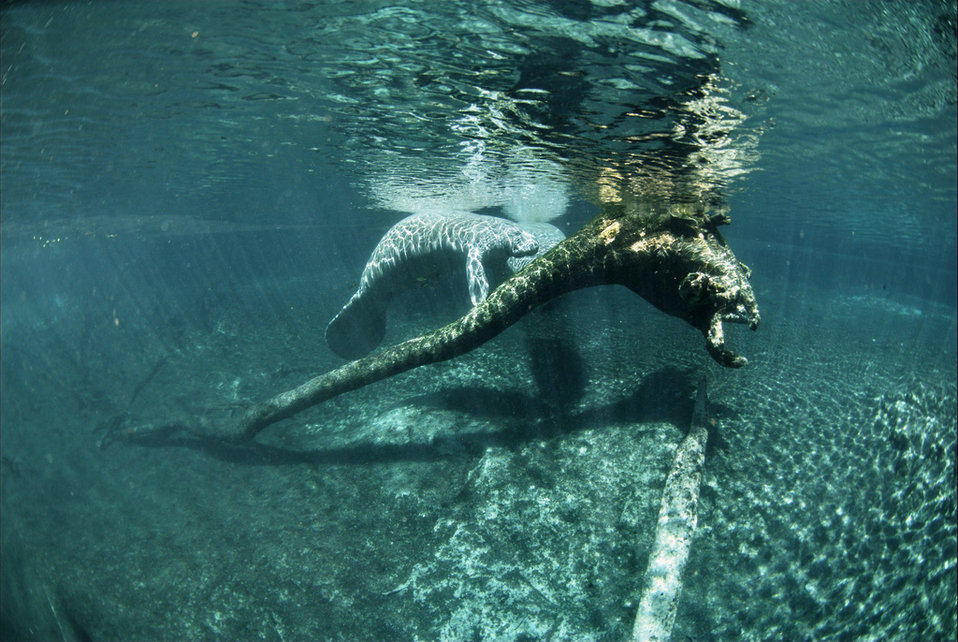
Endangered Florida manatee (Trichechus manatus)

Photo credit: David Hinkel

The Crystal River National Wildlife Refuge, was established in 1983 specifically for the protection of the endangered West Indian Manatee. This unique refuge preserves the last unspoiled and undeveloped habitat in Kings Bay, which forms the headwaters of the Crystal River. The refuge preserves the warm water spring havens, which provide critical habitat for the manatee populations that migrate here each winter.